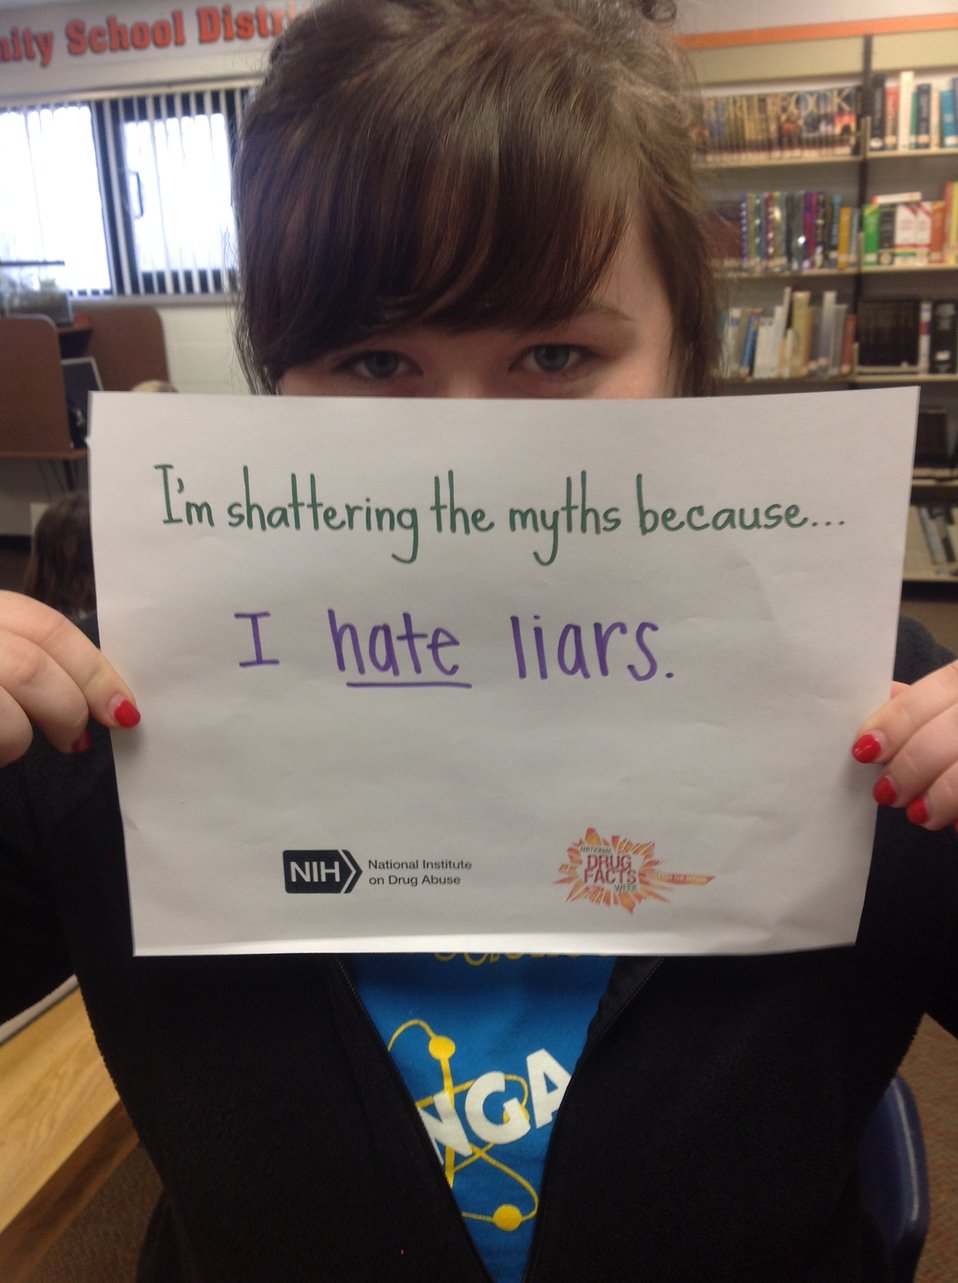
I'm Shattering the Myths Because...

Teenagers from the Van Buren County SAFE Coalition's, Youth Leadership Council (YLC) in Keosauqua, Iowa participate in various events during National Drug Facts Week, 2014.